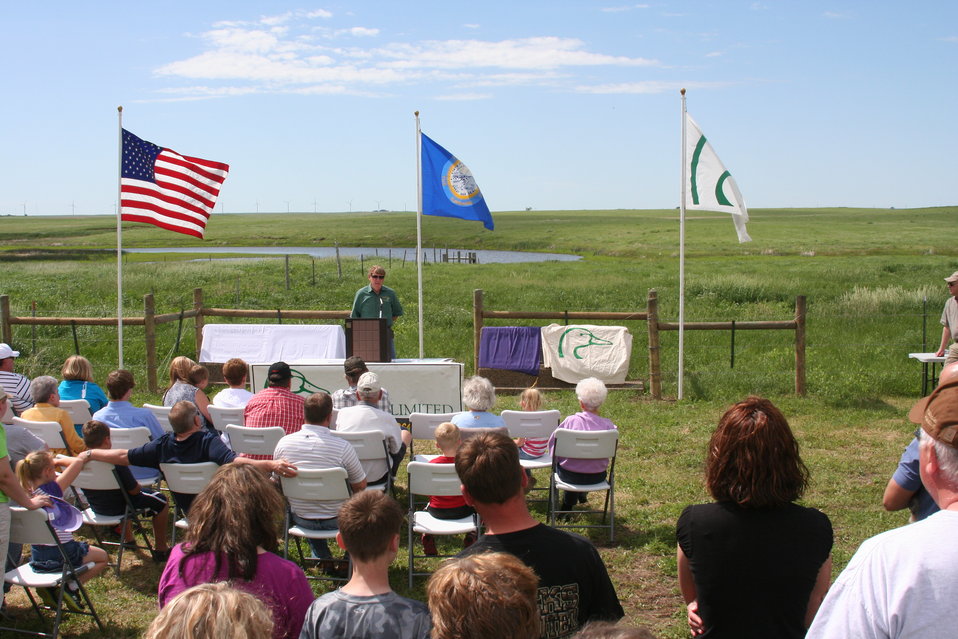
2013 Green Wing Dedication 016

Cowan/Harter WPA Green Wing Dedication.